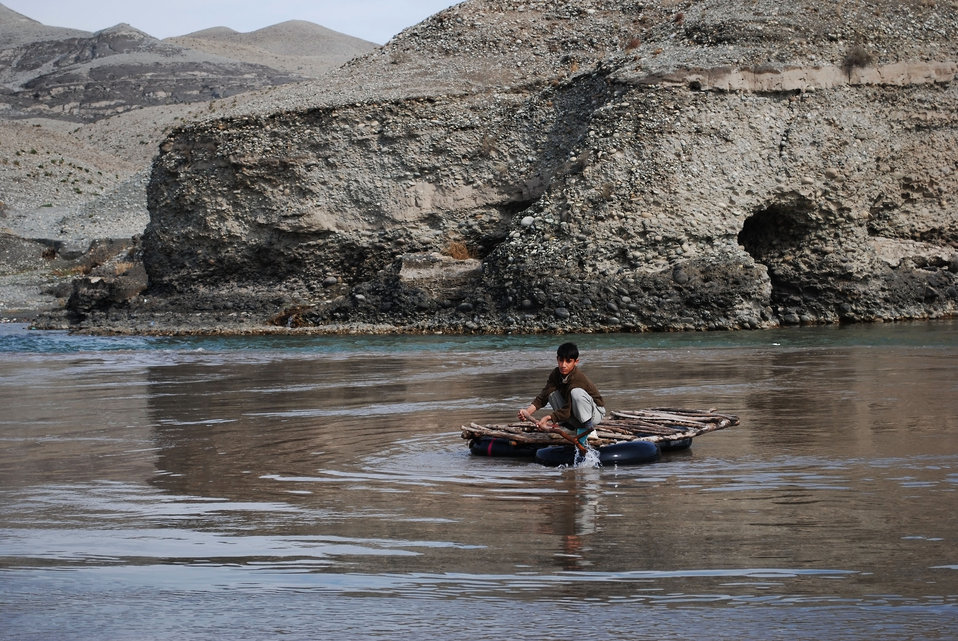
'On the Road' in Nangarhar Province